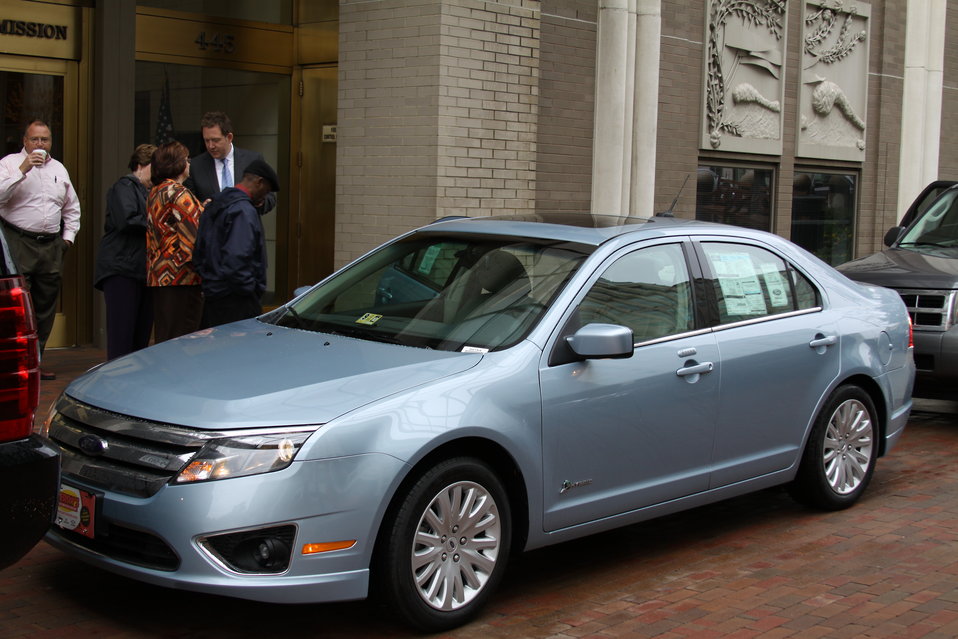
FCC Official Vehicle Tour